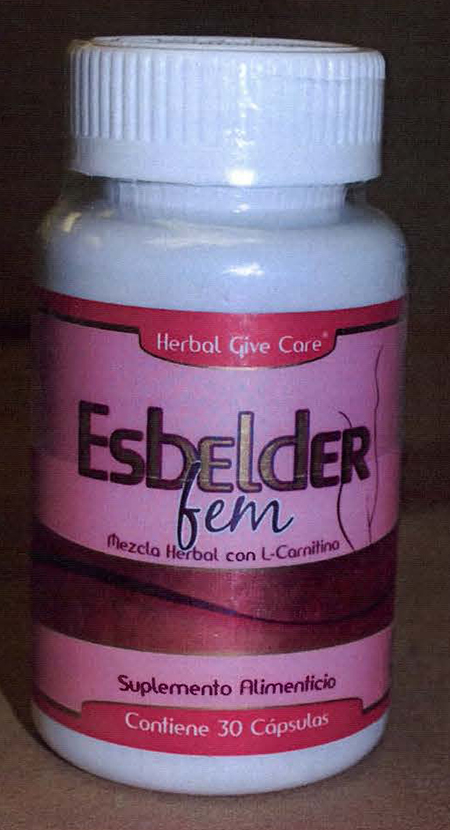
RECALLED – Dietary Supplement

August 16, 2013 – Product Recall – Herbal Give Care LLC Issues Voluntary Nationwide Recall of Esbelder Man Capsules, Esbelder Fem Capsules, and Esbelder Siloutte Capsules Vitamin Supplements Due to Potential Health Risks.